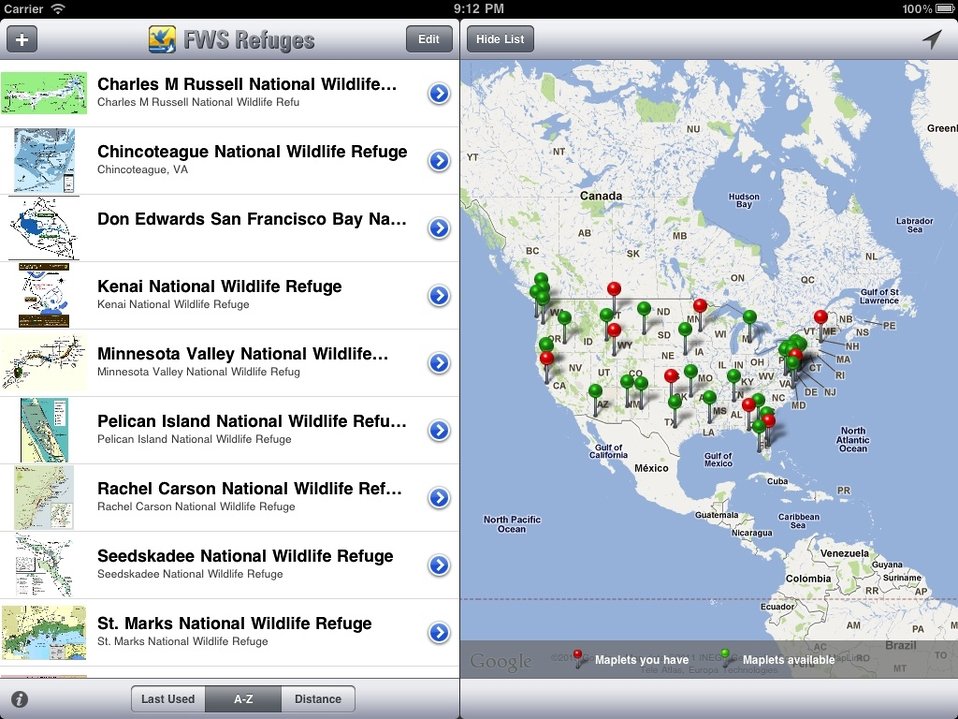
National Wildlife Refuge System map

Map showing location of national wildlife refuges in mainland United States can be seen by smartphone users who download MyRefuge app.